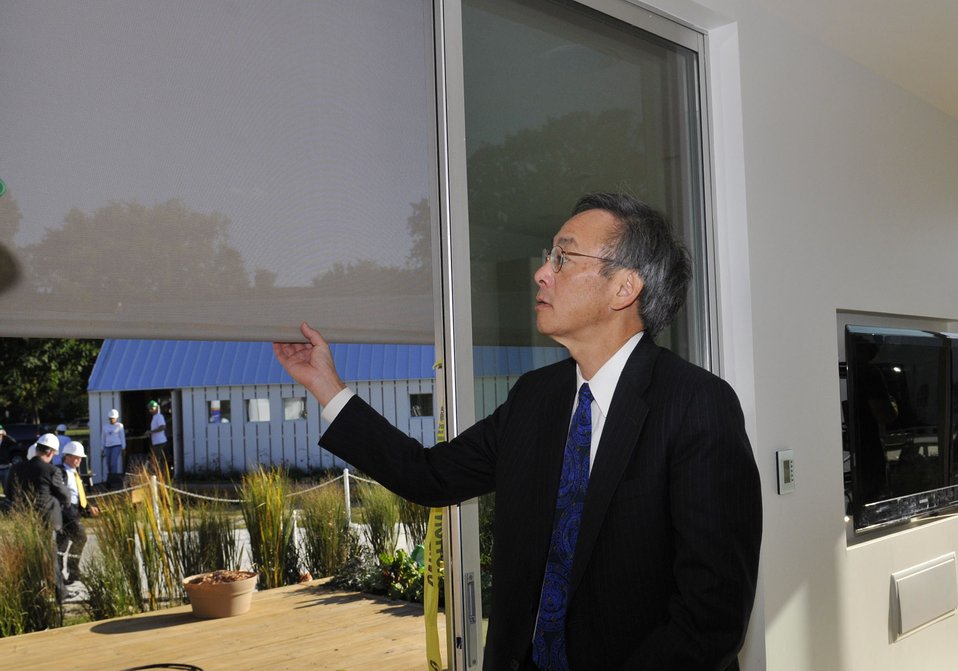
Solar Decathlon 2009 on the National Mall, with Sec. Chu

Solar Decathlon 09